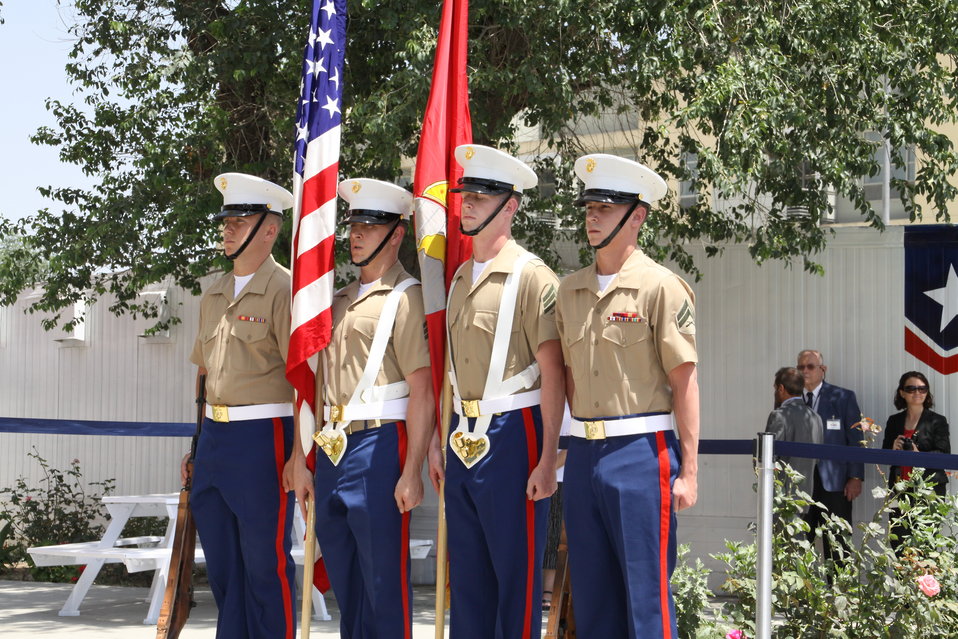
Kabul Official July 4th Celebration